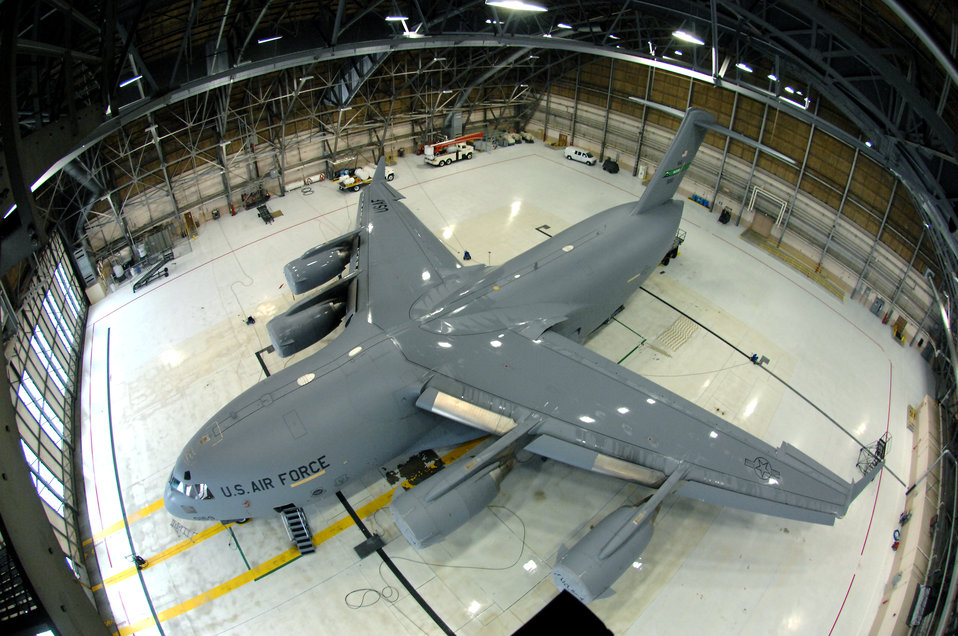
Glimmering Globemaster IIIs

A C-17 Globemaster III sits in Hangar 4 after being pressure washed during a routine home station inspection Jan. 29 at McChord Air Force Base, Wash. Regular washing and rinsing prevent and control aircraft corrosion.